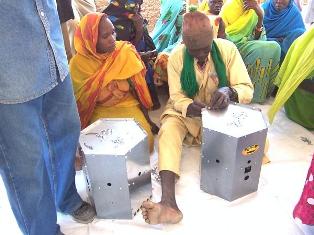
People build “Save-80” stoves in Mile Camp in eastern Chad on May 8, 2008. In fiscal year 2010, two principal factors drove PRM’s development of a humanitarian strategy for Chad and the region. The first was security. Despite the presence of UN peacekeepers in Chad, both civilians and humanitarian workers have been subjected to an increasing level of banditry: robbery, carjackings, and at times even kidnapping and murder. Now the Chadian government has asked the UN mission to leave the country, an event that would further expose humanitarians and refugees to danger. The second factor was eastern Chad’s qualification as a protracted refugee situation, meaning it has been in existence for over five years. Even with some hopeful political steps towards peace in Darfur in early 2010, the refugees will likely remain in Chad for several more years. With lifesaving services well-established in the camps, therefore, PRM has shifted its focus to programs that provide a longer-term benefit, such as education and vocational training.